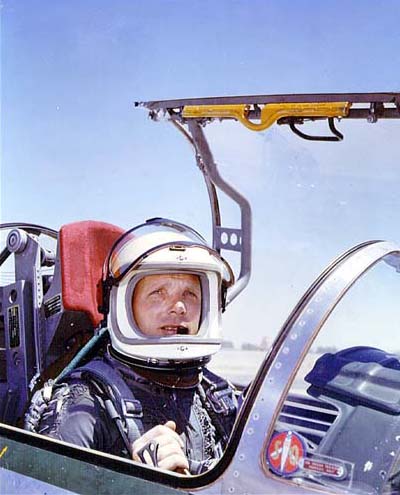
Captain Iven C. Kincheloe Jr.

1950's -- Captain Iven C. Kincheloe Jr. seated in the cockpit of an F-104. Kincheloe, the personification of the